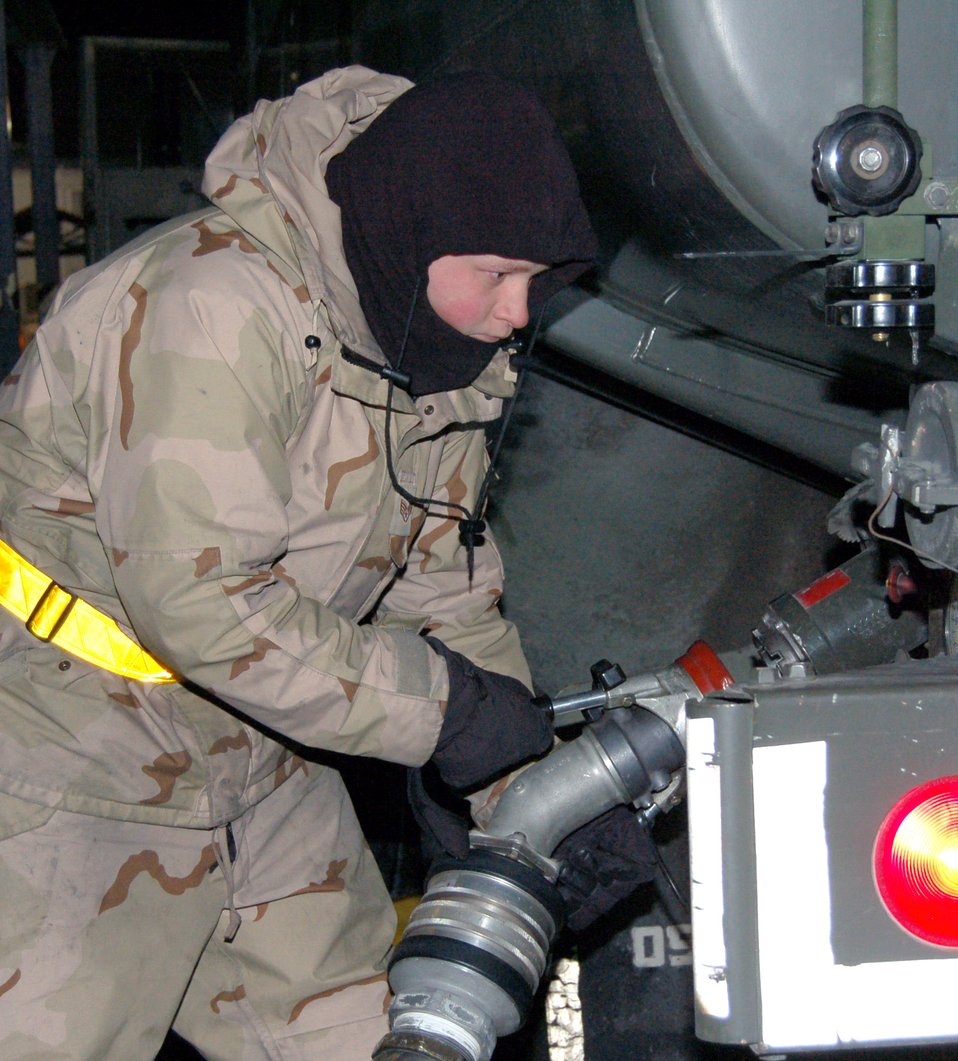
Record-setting fuels flight keeps gas flowing at Manas

Senior Airman Phillip Johnson attaches a fuel hose to an R-11 fuel truck after unloading his fuel load into a KC-135 Stratotanker Nov 25 at Manas Air Base, Kyrgyzstan. Airman Johnson is assigned to the 376th Expeditionary Logistics Readiness Squadron, Petroleum, Oils and Lubricants Flight and deployed from the 92nd LRS at Fairchild Air Force Base, Wash.